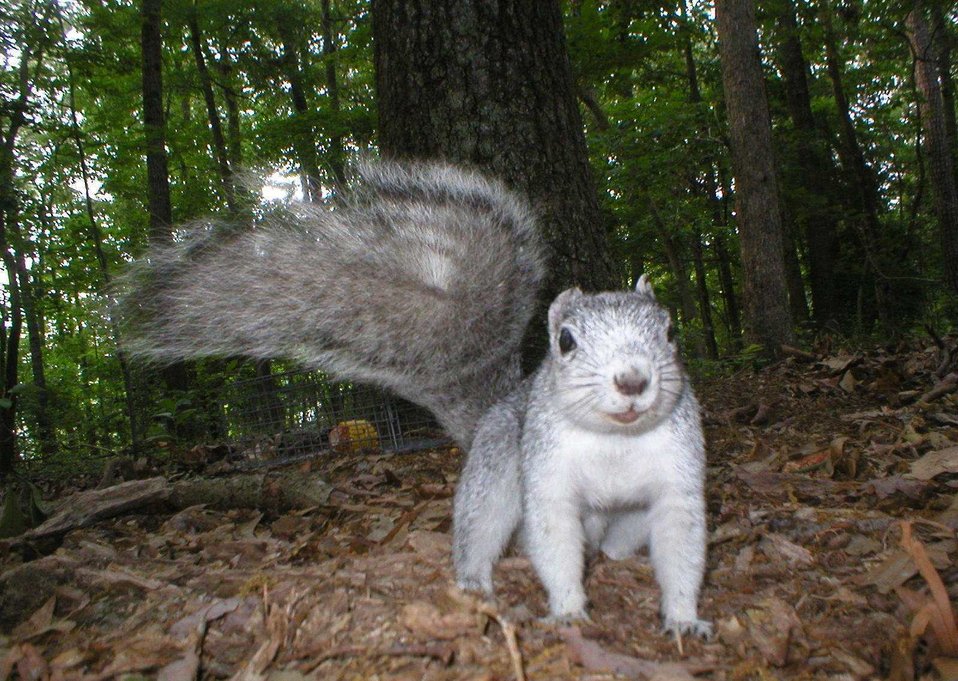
Delmarva fox squirrel caught on remotely triggered camera